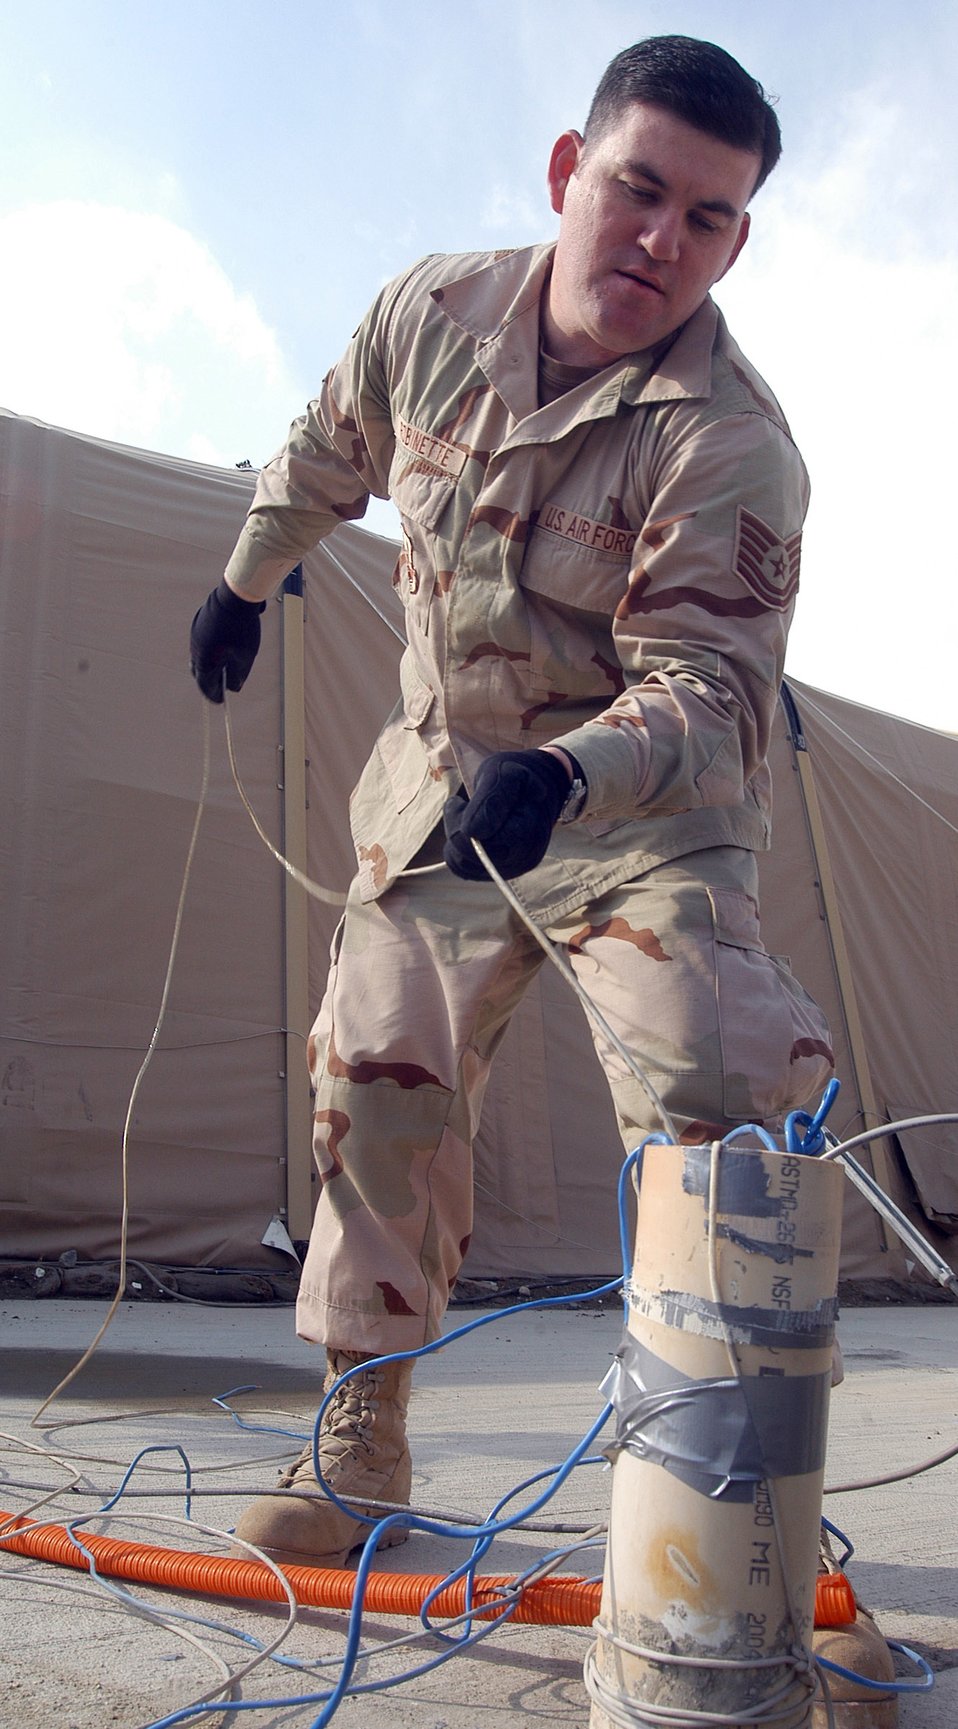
Receiving cable

BAGRAM AIRFIELD, Afghanistan (AFPN) -- Tech. Sgt. Michael Robinette helps replace 75 yards of broken network cable. Since arriving here in September the team has re-run more than 20 network lines. Sergeant Robinette, a native of Joliet, Ill., is deployed from Davis-Monthan Air Force Base, Ariz.